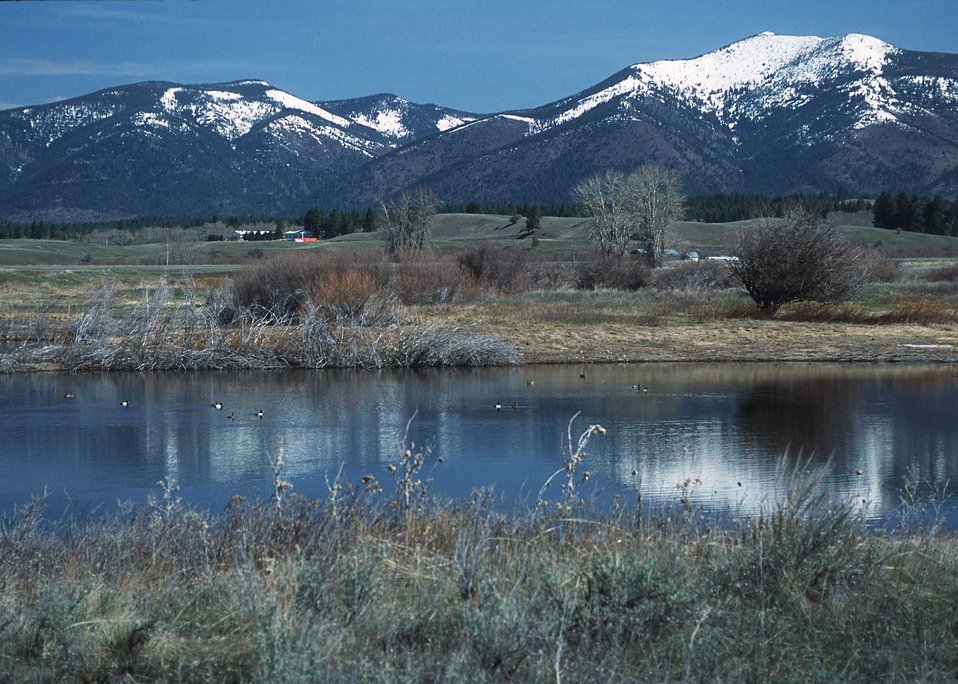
Scenic northcentral Montana.